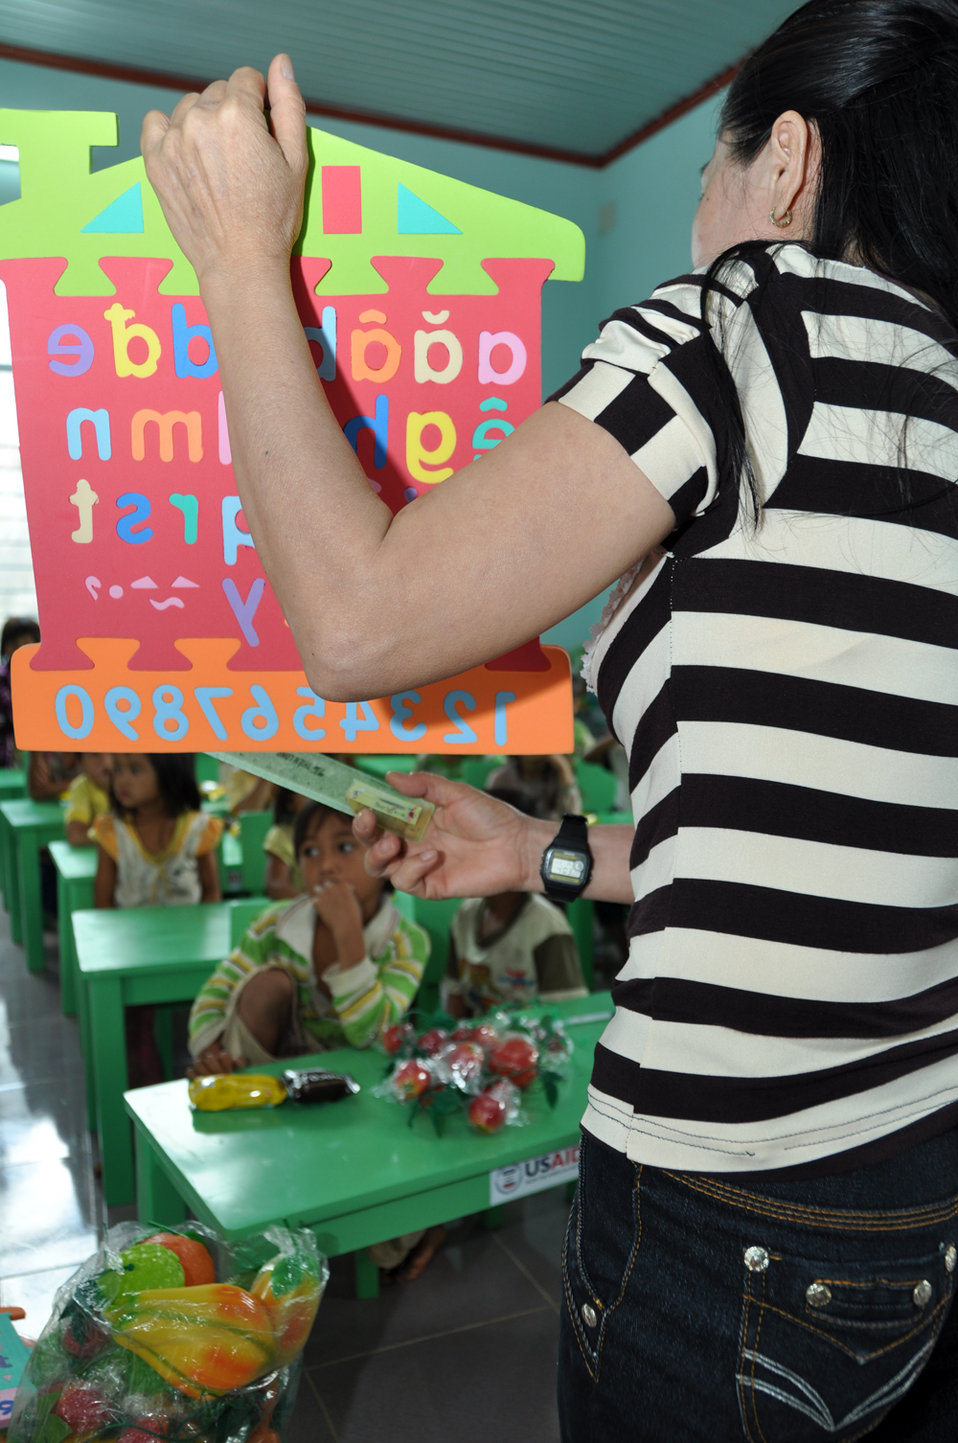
USAID contributes to refurbished pre-schools and teacher training in Vietnam